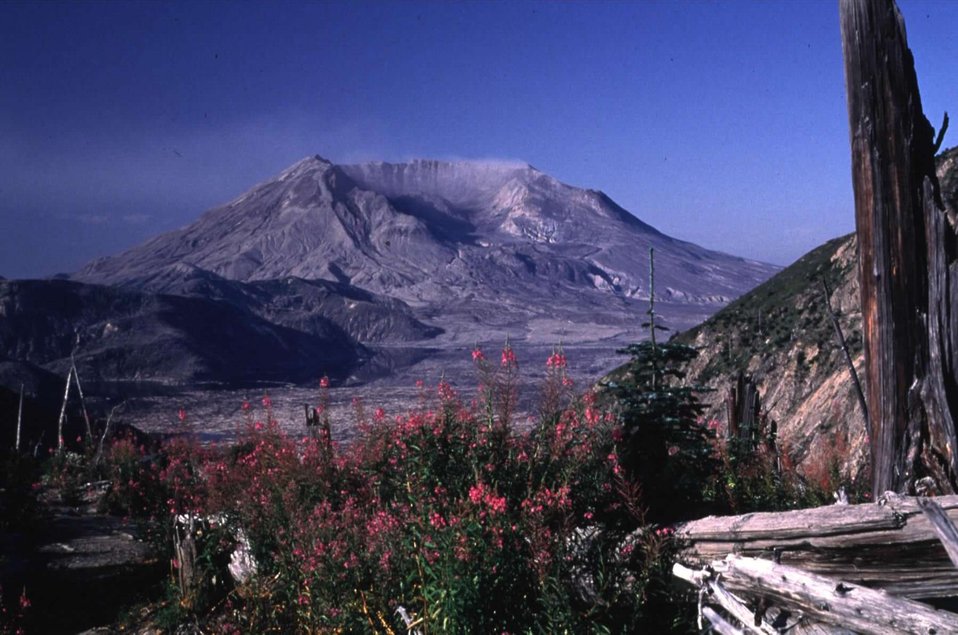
Mount St. Helen

View of the north side of Mount St. Helen's overlooking Spirit Lake from the Boundary Trail at Norway Pass. This side of the volcano was literally blown off - more than 1300 feet was blown up and out from the eruption.